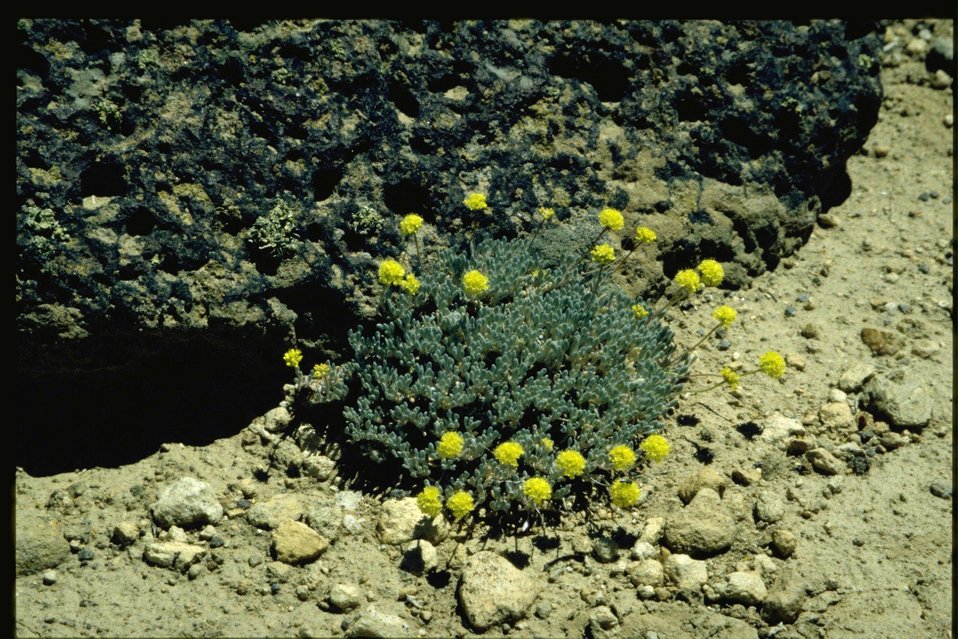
Farshot of buckwheat habitat.